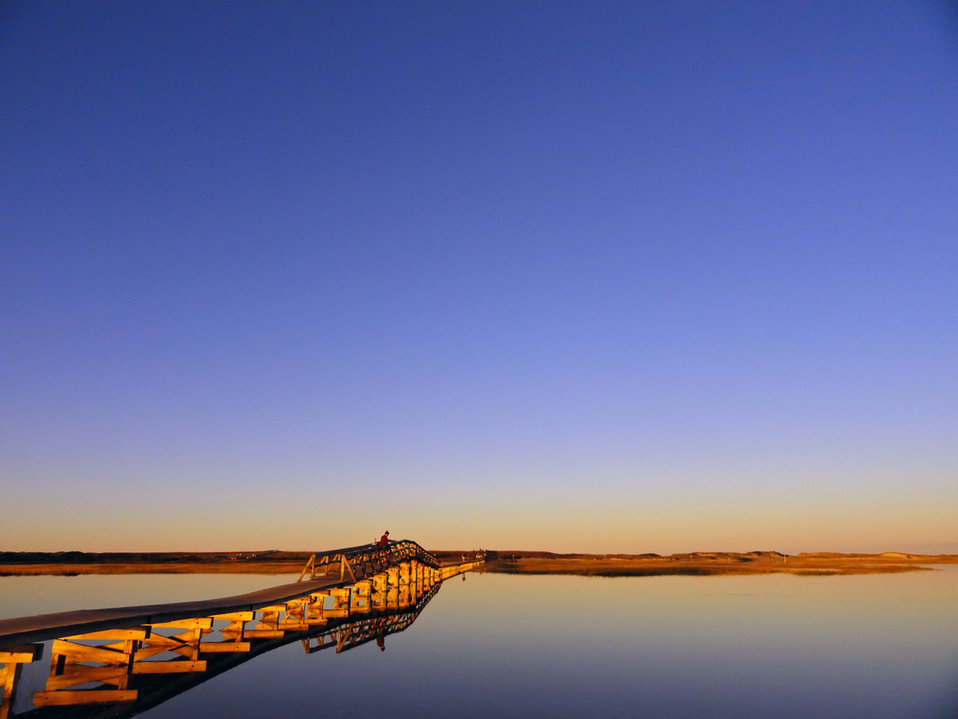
Foot Bridge

Photographed on Cape Cod, MA.